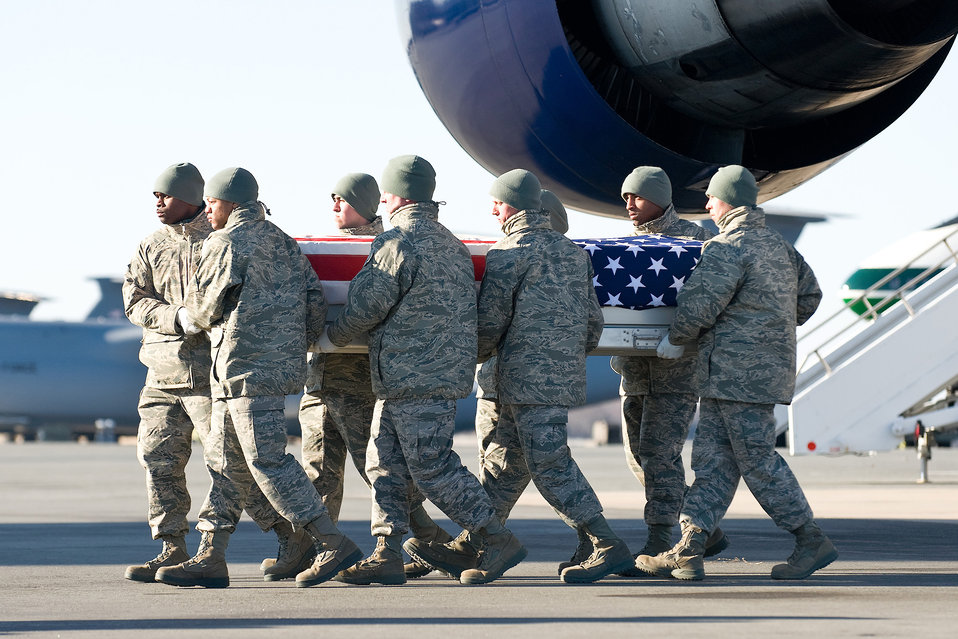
RAF Alconbury Airman dies in Southwest Asia

An Air Force carry team transfers the remains of Airman 1st Class Christoffer P. Johnson Feb. 19, 2011, at Dover Air Force Base, Del. Airman Johnson was assigned to the 423rd Security Forces Squadron at Royal Air Force Alconbury, England.